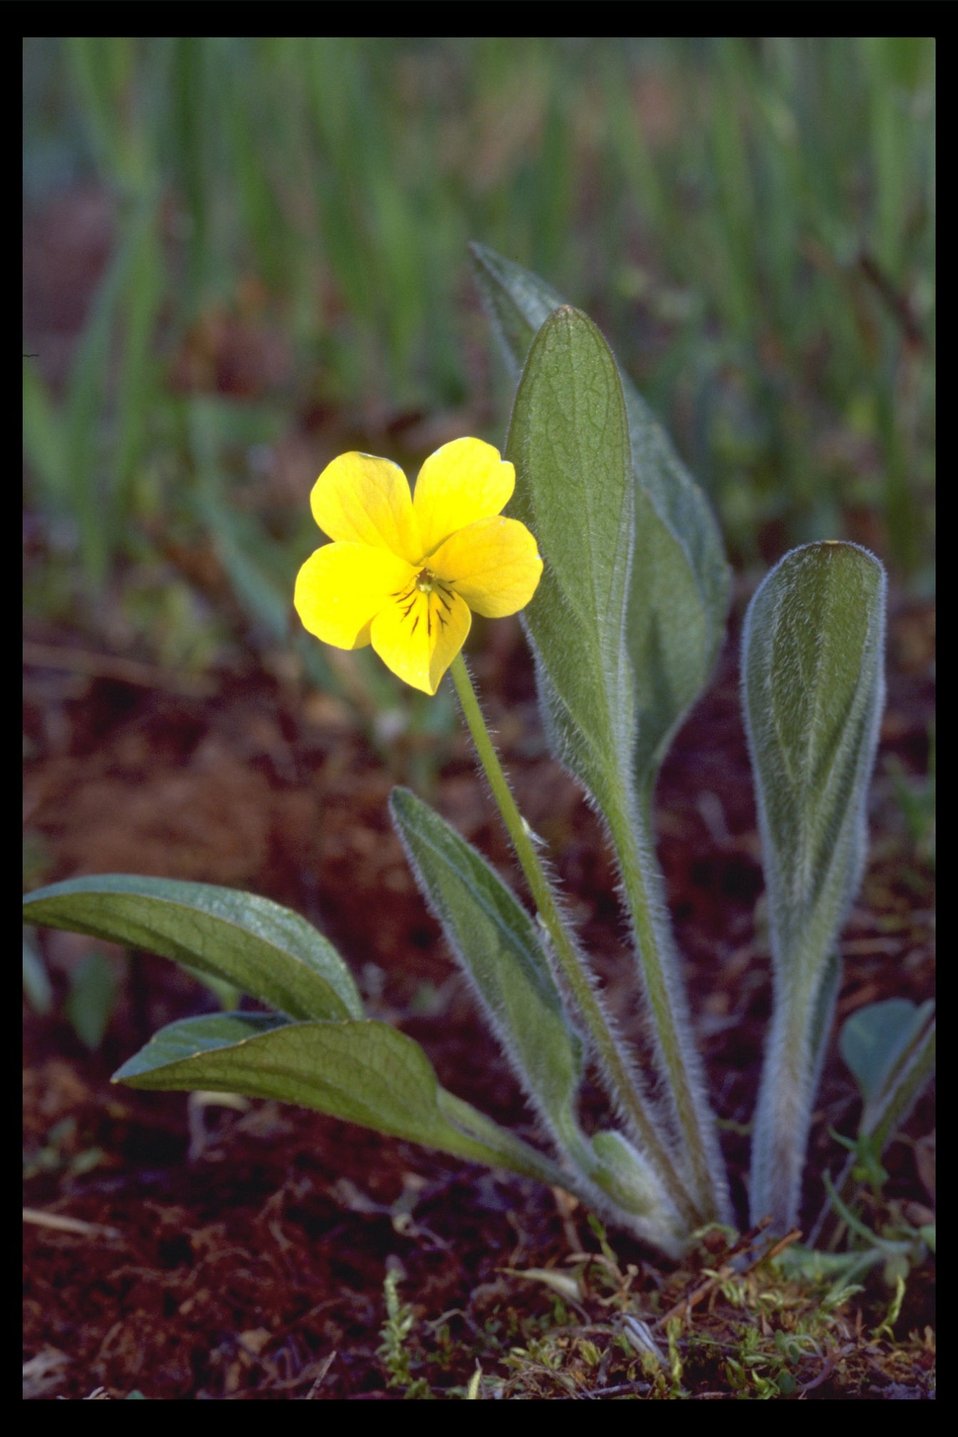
Hairy-yellow Violet or the Nuttall's Violet (Viola nuttallii) at Shady Cove near the Rogue River.